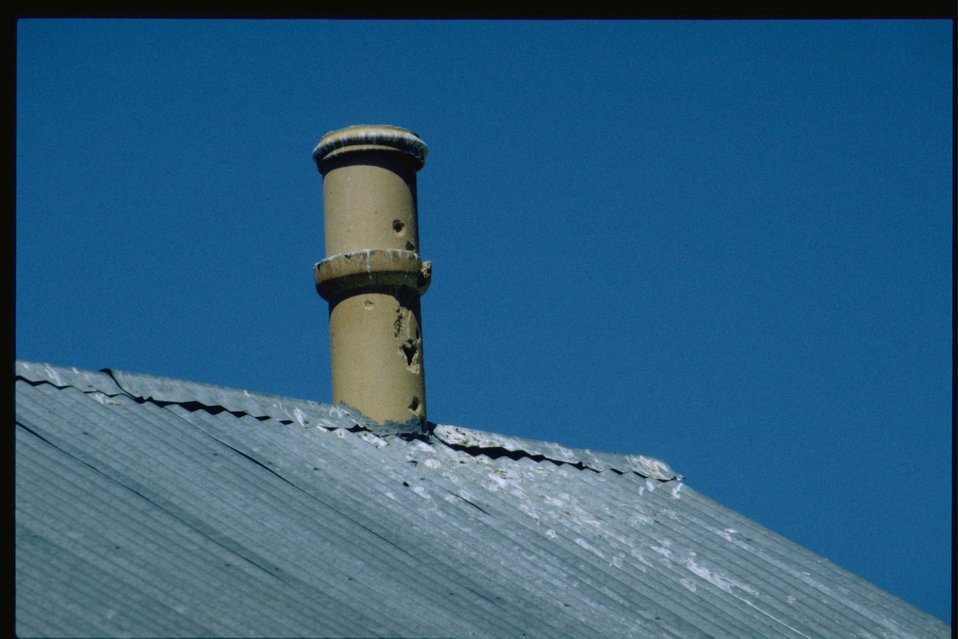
Medium shot of smoke stack at Shirk Ranch.